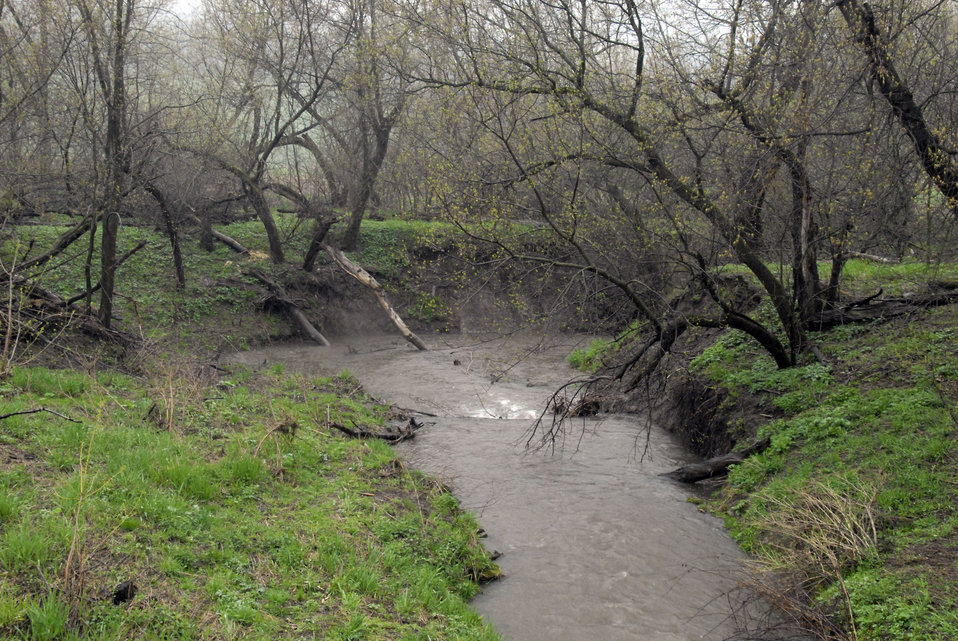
A rain-swollen stream flows through farmland in La Crosse, Wisconsin on April 25, 2008. The U.S. Department of Agriculture’s (USDA) Natural Resource Conservation Service (NRCS) has various programs to assist farmers and ranchers in implementing and maintaining conservation practices that will enable them to have more sustainable and profitable farms and ranches.